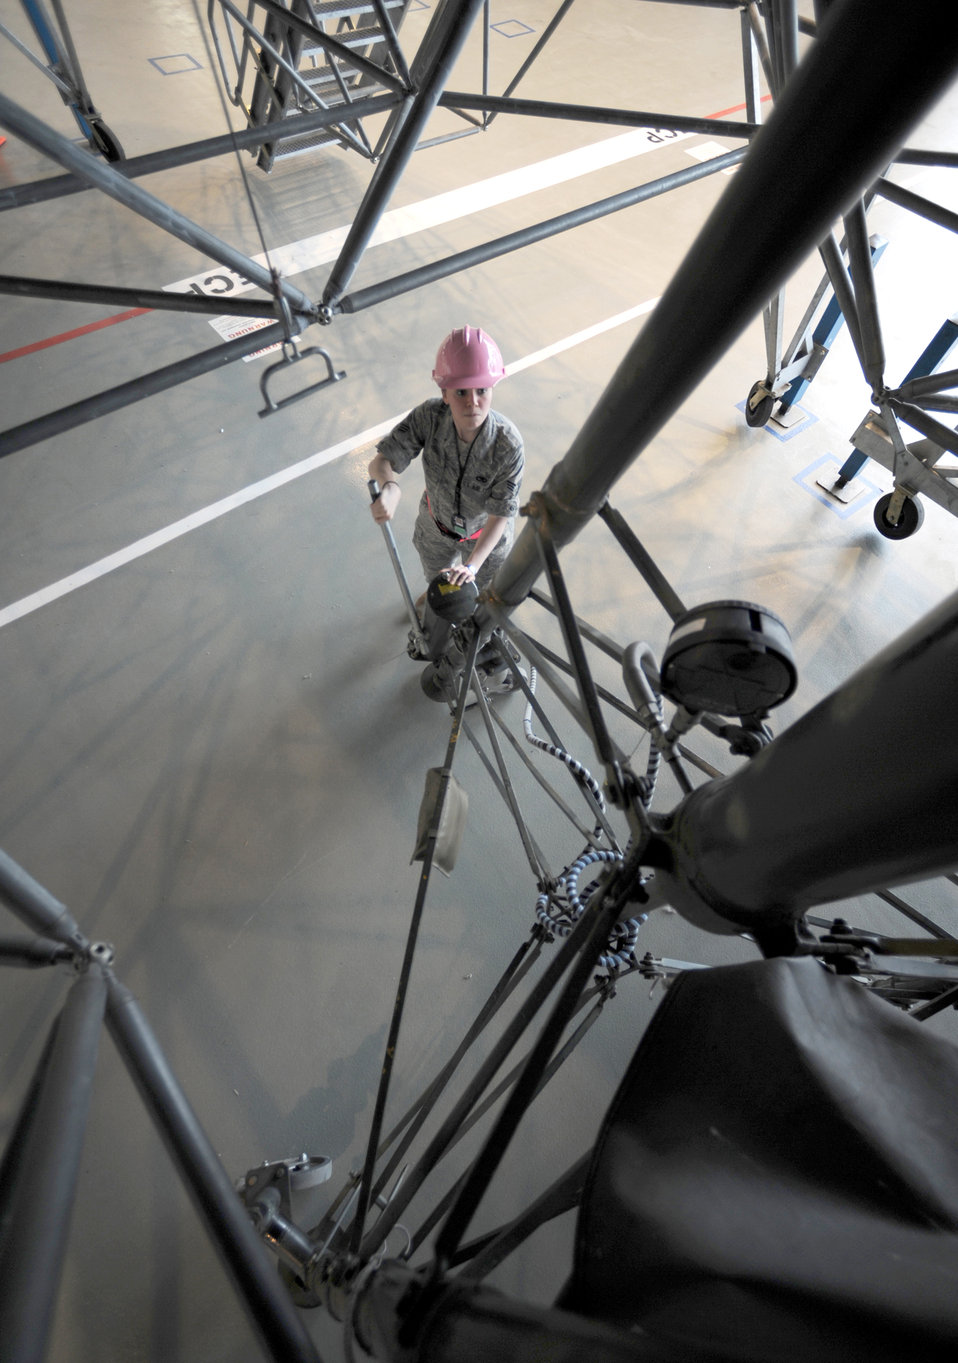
1st Isochronal Inspection

Senior Airman Stephanie Hall raises a jack up for support during an isochronal inspection May 26, 2010, at Ramstein Air Base, Germany. This is the first C-130J all active-duty isochronal inspection done in the Air Force. Airman Hall is the 86th Maintenance Squadron isochronal crew chief.